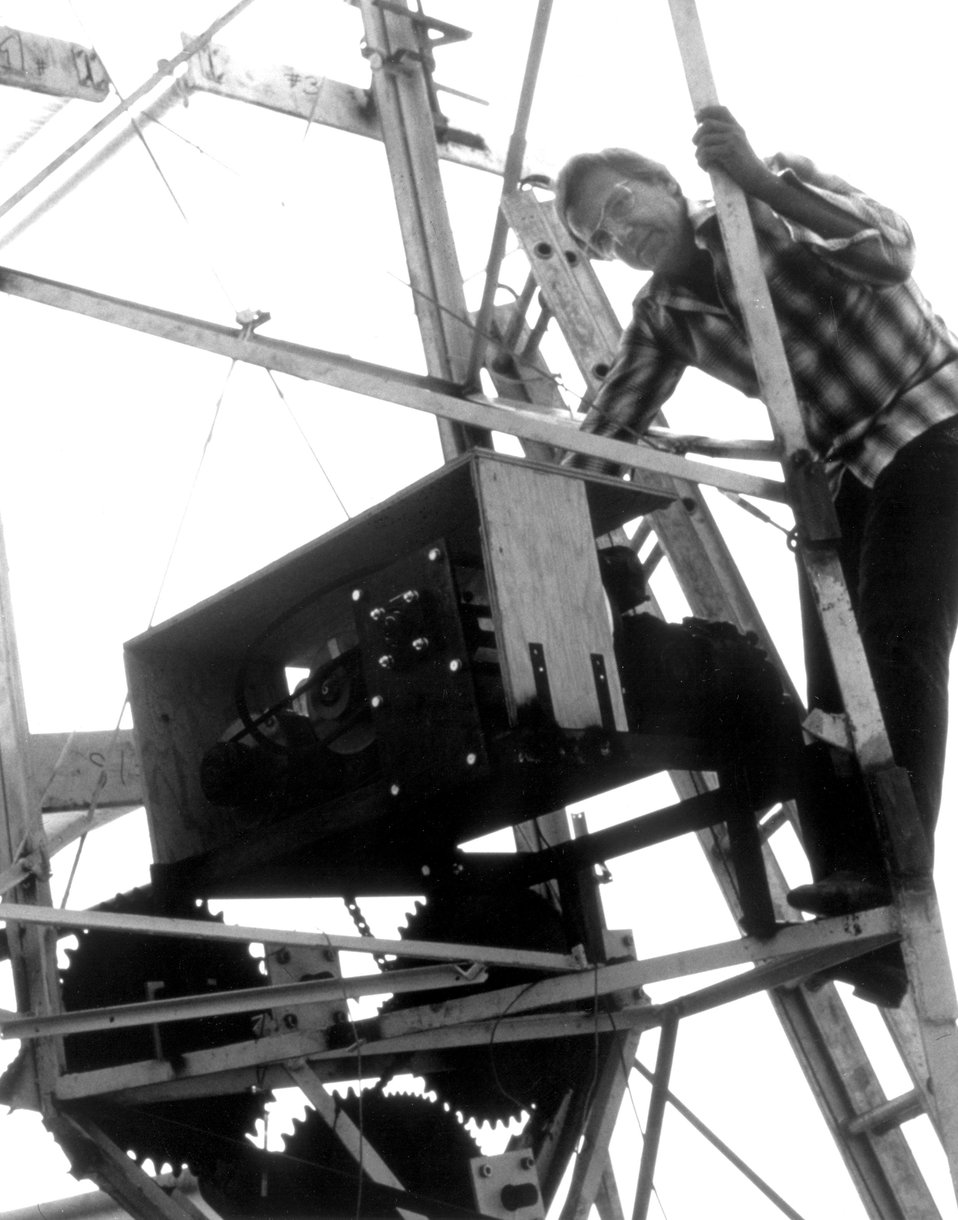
Wind energy machine, invented by Daniel Schneider of Irving, Texas, is being developed under a grant from the Department of Energy's (DOE) Energy-Related Inventions program. c. 1978